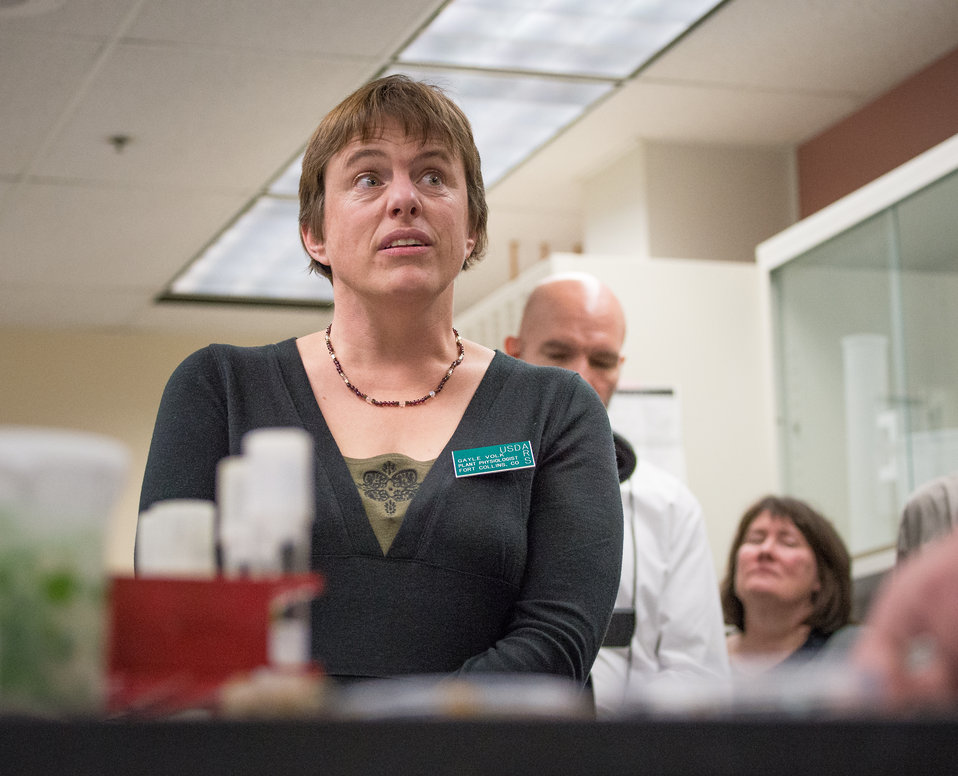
U.S. Department of Agriculture (USDA), Agriculture Research Service (ARS), National Center for Genetic Resources Preservation (NCGRP), Plant Germplasm Preservation Research Unit (PGPRU) Research Leader, Research Plant Physiologist Dr. Gayle Volk explains the research that is being conducted, in Ft. Collins, CO, on Wednesday, Nov. 6, 2013.